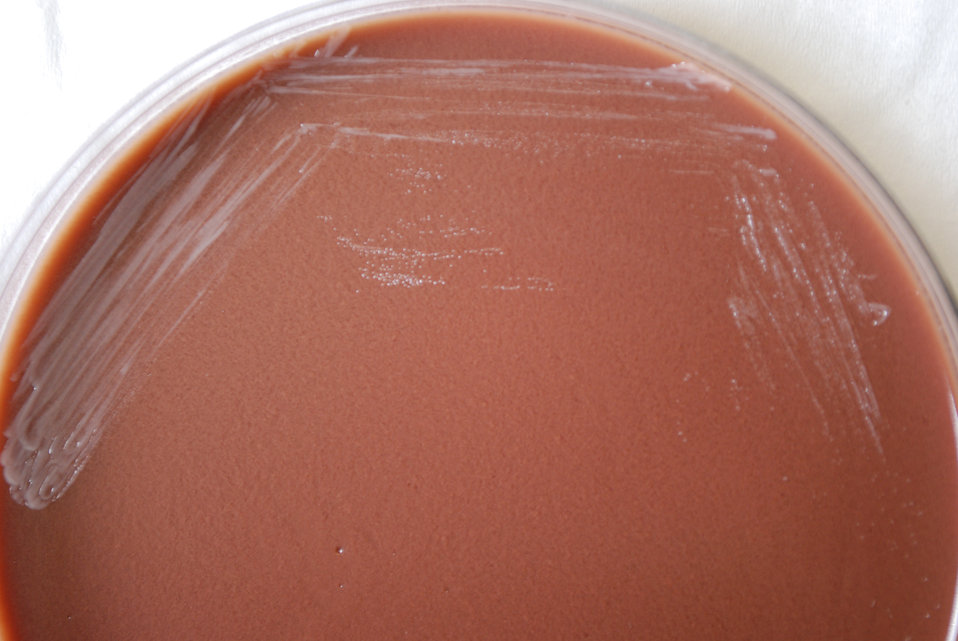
An enlarged view of PHIL 12243, this photograph depicts the colonial morphology displayed by Gram-negative Brucella abortus bacteria, which was grown on a medium of chocolate agar, for a 48 hour time period, at a temperature of 37�C. B. abortus is one of the bacterial species responsible for causing the infectious disease known as brucellosis.